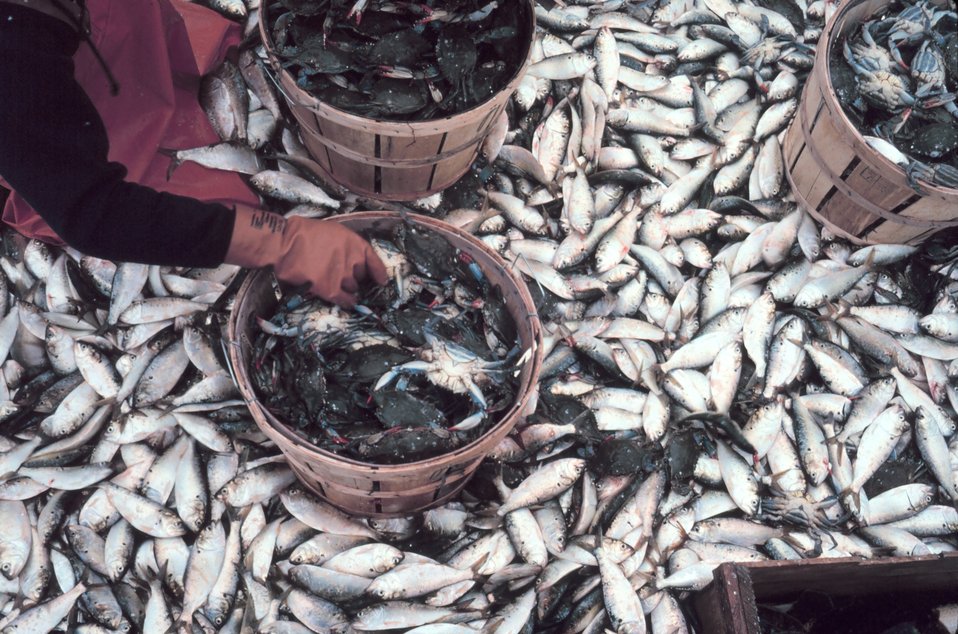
The bounty of the Chesapeake - bushel baskets of blue crab - Callinectes sapidus - and a profusion of Atlantic menhaden - Brevoortia tyrannus - on the deck.